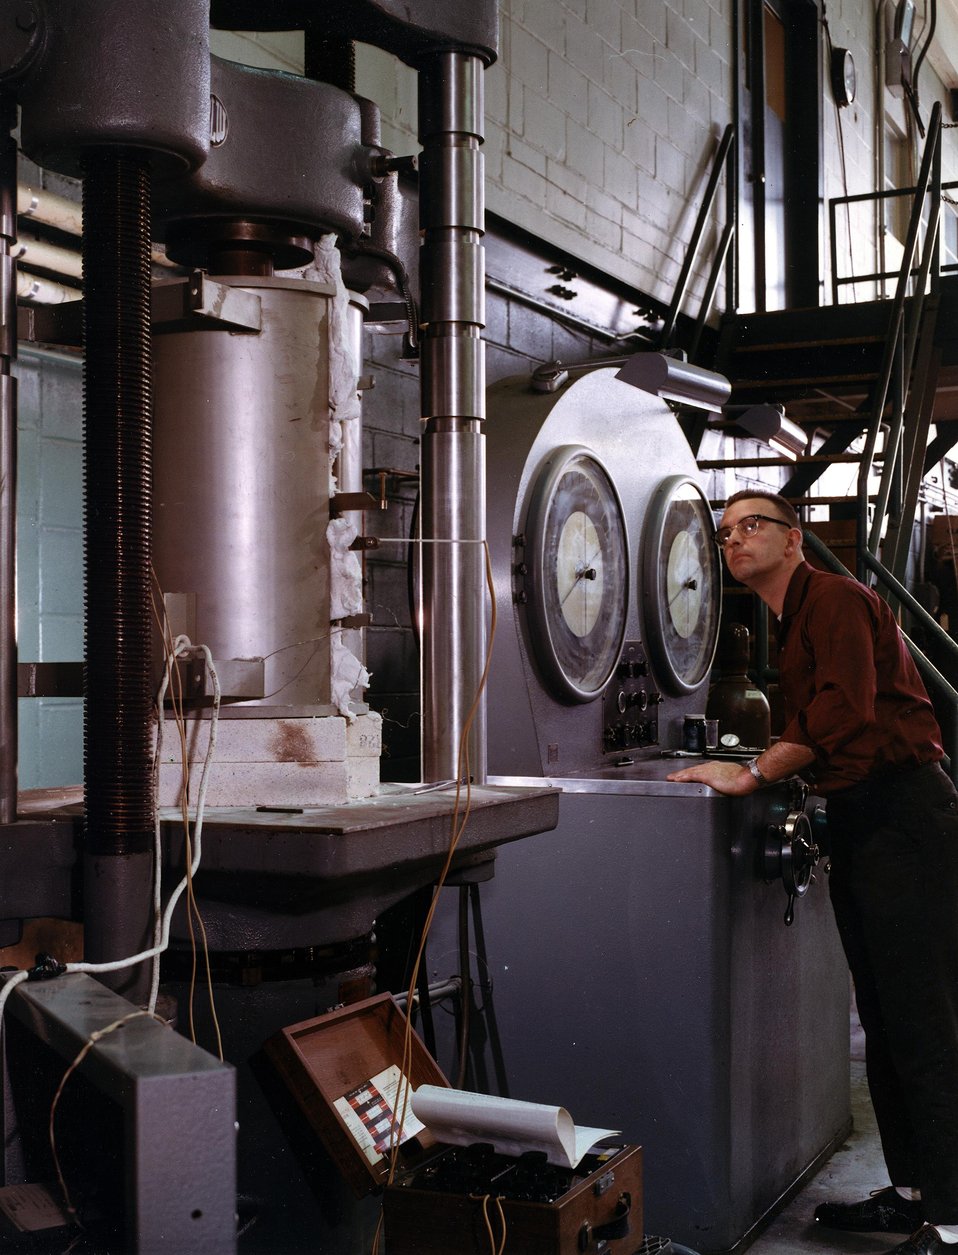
The semiconductor Geranium, because of its crystal structure, possesses certain advantages as a neutron monochrameter. c. 1967